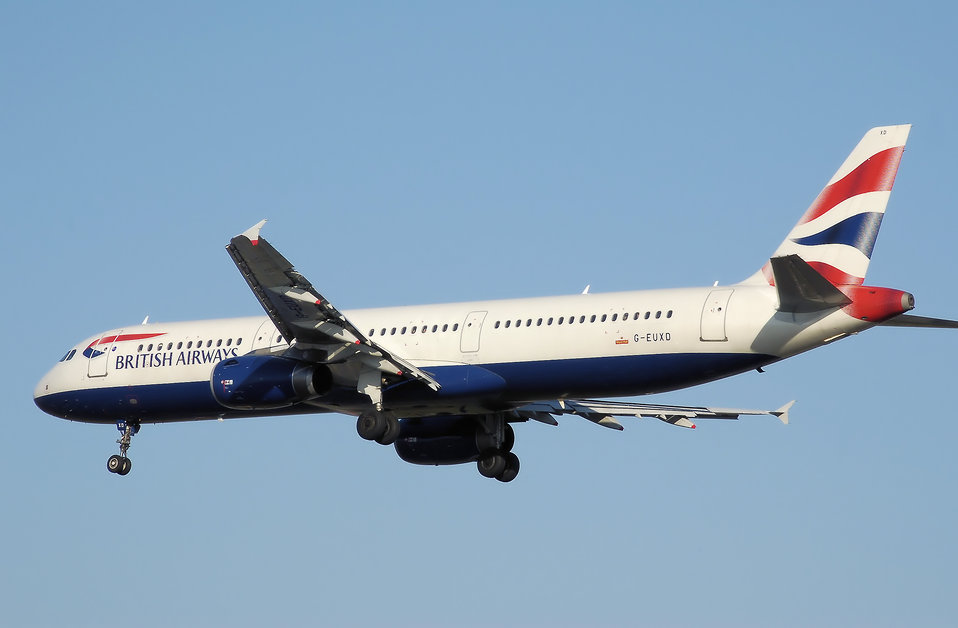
British Airways Airbus A321-200 (G-EUXD) lands at London Heathrow Airport, England.